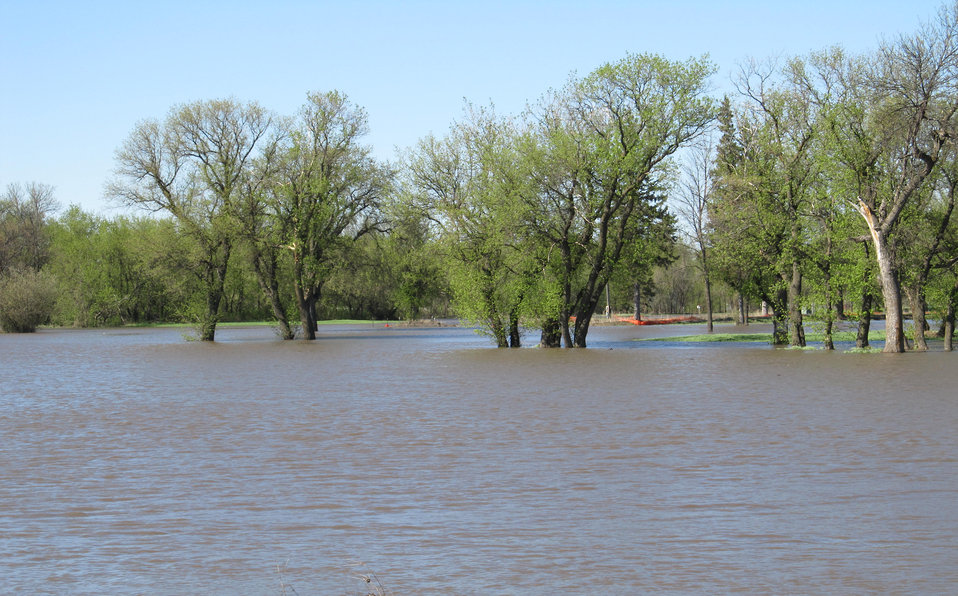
Flooding and water damage in the Park and Tongue River Watersheds located in Cavalier, Pembina and Cavalaier Counties in ND on Thursday, May 23, 2013.